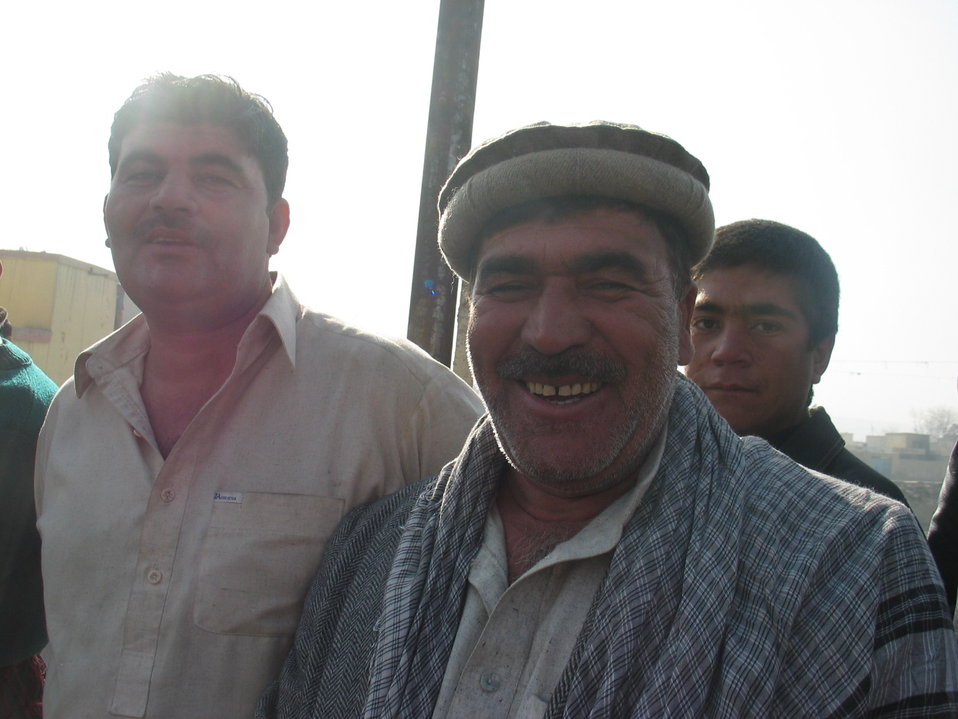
Kabul River Bridge Renovation, December 3, 2010